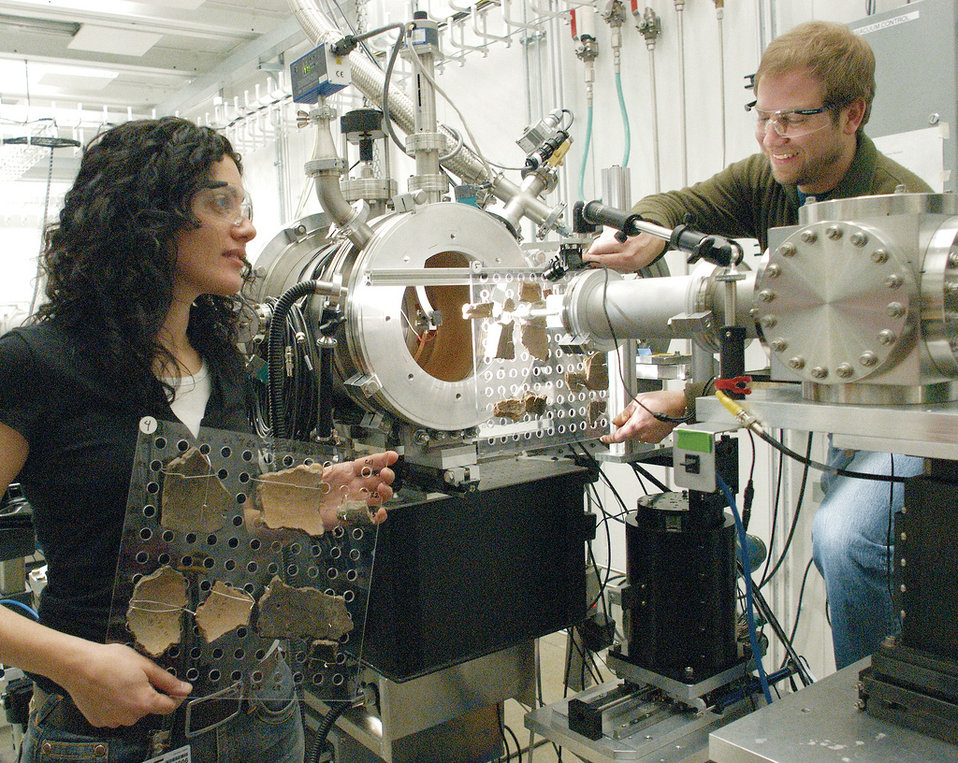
Lori Khatchadourian, University of Michigan and Adam Smith, the University of Chicago, switch sample mounts at the Advanced Photon Source ChemMatCARS 15-ID-D beamline. The samples are from one of Smith's excavations in Armenia and date to 1300 B.C. Smith's group is analyzing relics from northern China, the southern Urals, and the south Caucasus. The group's goal is to determine the utility of APS analysis to examining large assemblages of objects from different parts of the past.